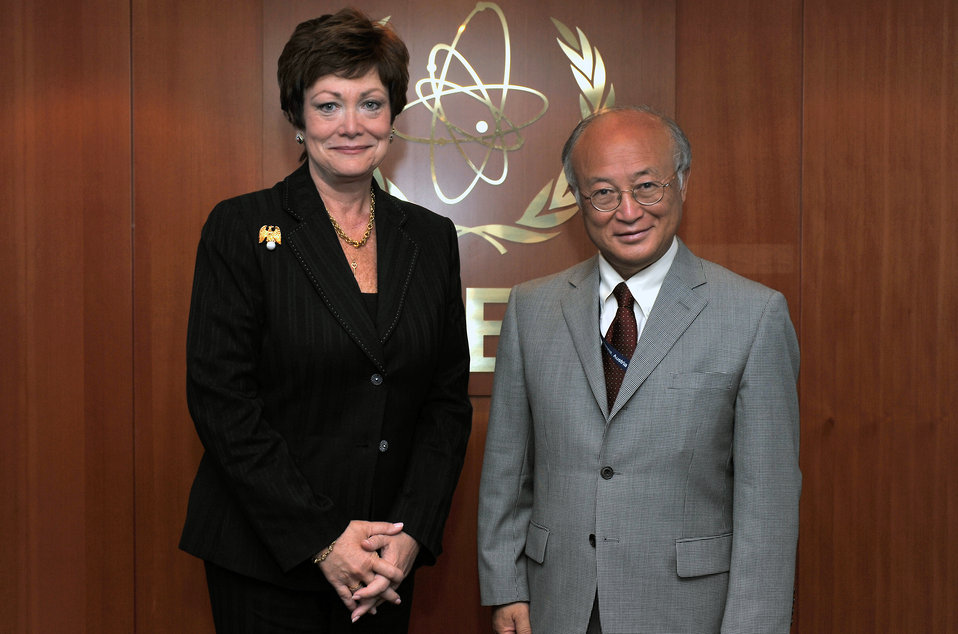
Under Secretary Tauscher Meets With IAEA Director General Amano

Ellen Tauscher, Under Secretary of State for Arms Control and International Security Affairs, meets with IAEA Director General Yukiya Amano at the IAEA’s headquarters in Vienna, Austria, on June 15, 2011.